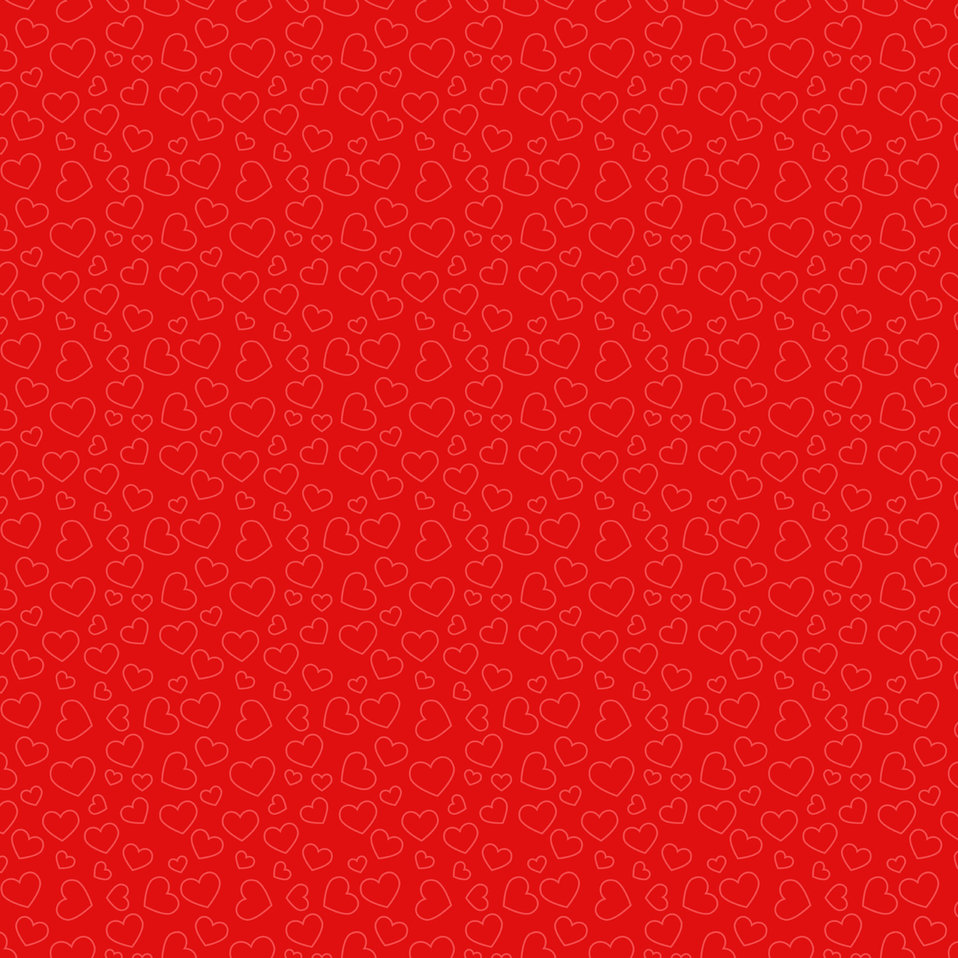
Wallpapers

A set of wallpapers or background with hearts.